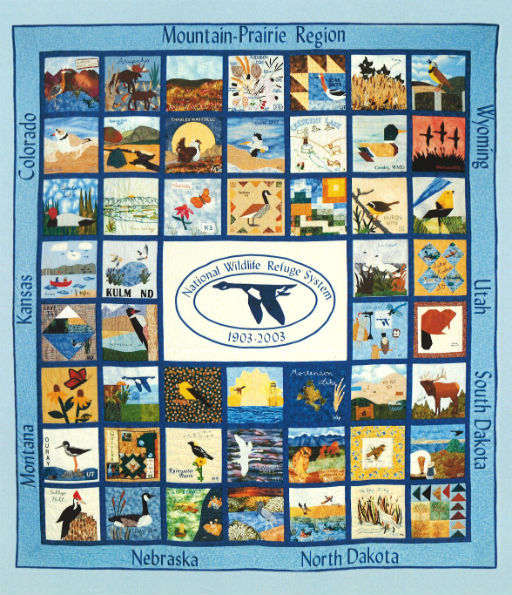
The Centennial Quilt

Region 6 Centennial Quilt